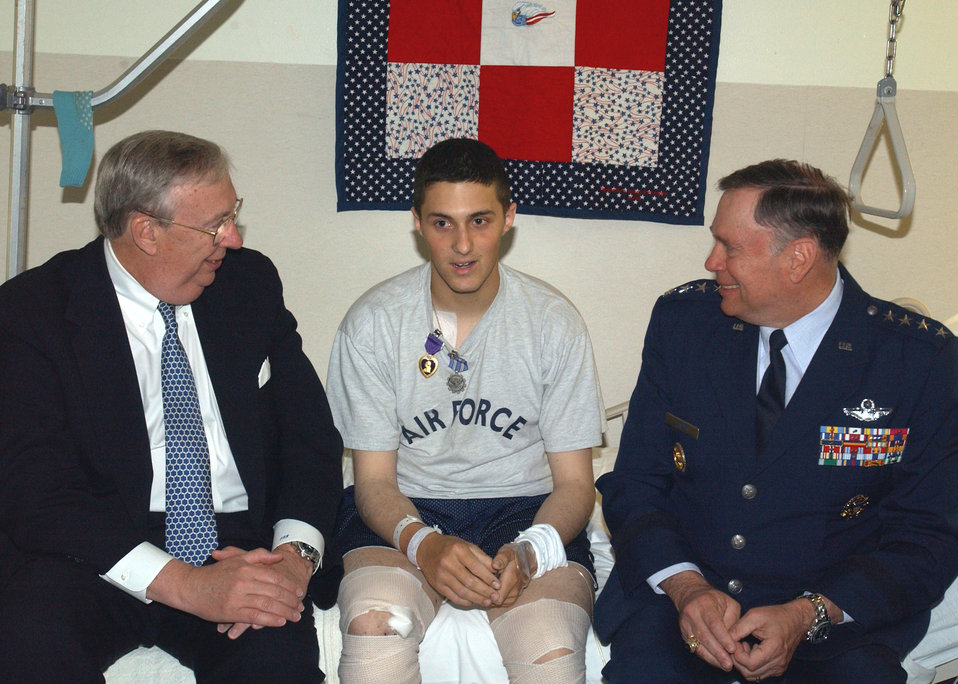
A heartfelt presentation

WALTER REED ARMY MEDICAL CENTER, D.C. -- Airman 1st Class Anthony Pizzifred visits with Secretary of the Air Force Dr. James G. Roche and Air Force Chief of Staff Gen. John P. Jumper here March 24. Airman Pizzifred was on a foot patrol at Bagram Air Base, Afghanistan, when he stepped on a mine March 13. He severely injured his left foot and sustained minor cuts on his right leg. Secretary Roche presented Airman Pizzifred with a Purple Heart. The Airman also received an Air Force Achievement Medal for his tour at Bagram. He is assigned to the 5th Security Forces Squadron at Minot Air Force Base, N.D.